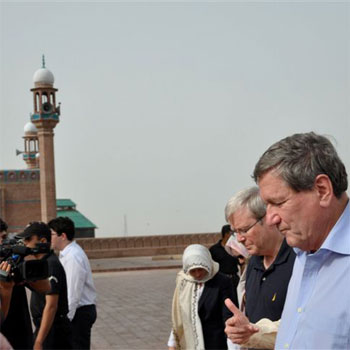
Australian Foreign Minister Rudd and Special Representative Holbrooke Visit the Shah Rukn-e-Alam Shrine

Australian Foreign Minister Kevin Rudd and U.S. Special Representative for Afghanistan and Pakistan Richard C. Holbrooke visit the Shah Rukn-e-Alam shrinein Multan, Pakistan, on September 16, 2010.